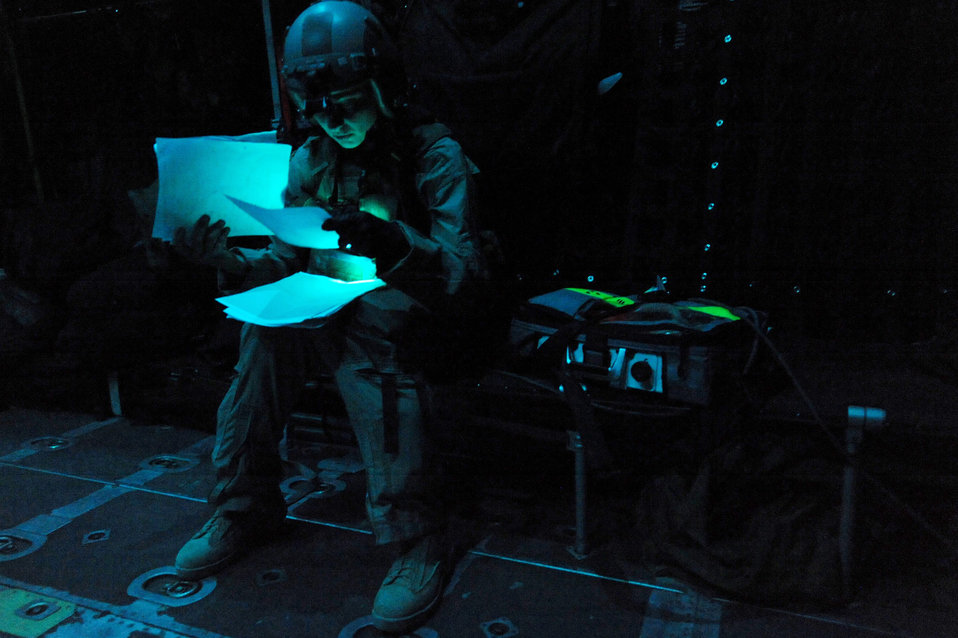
Flight surgeon

Capt. Susan Marchiano looks over a wounded U.S. armed forces member's treatment notes while he is being transported to a field hospital aboard an HC-130 P/N King aircraft April 12, 2010, in Afghanistan. Marchiano was a flight doctor assigned to the 79th Expeditionary Rescue Squadron.